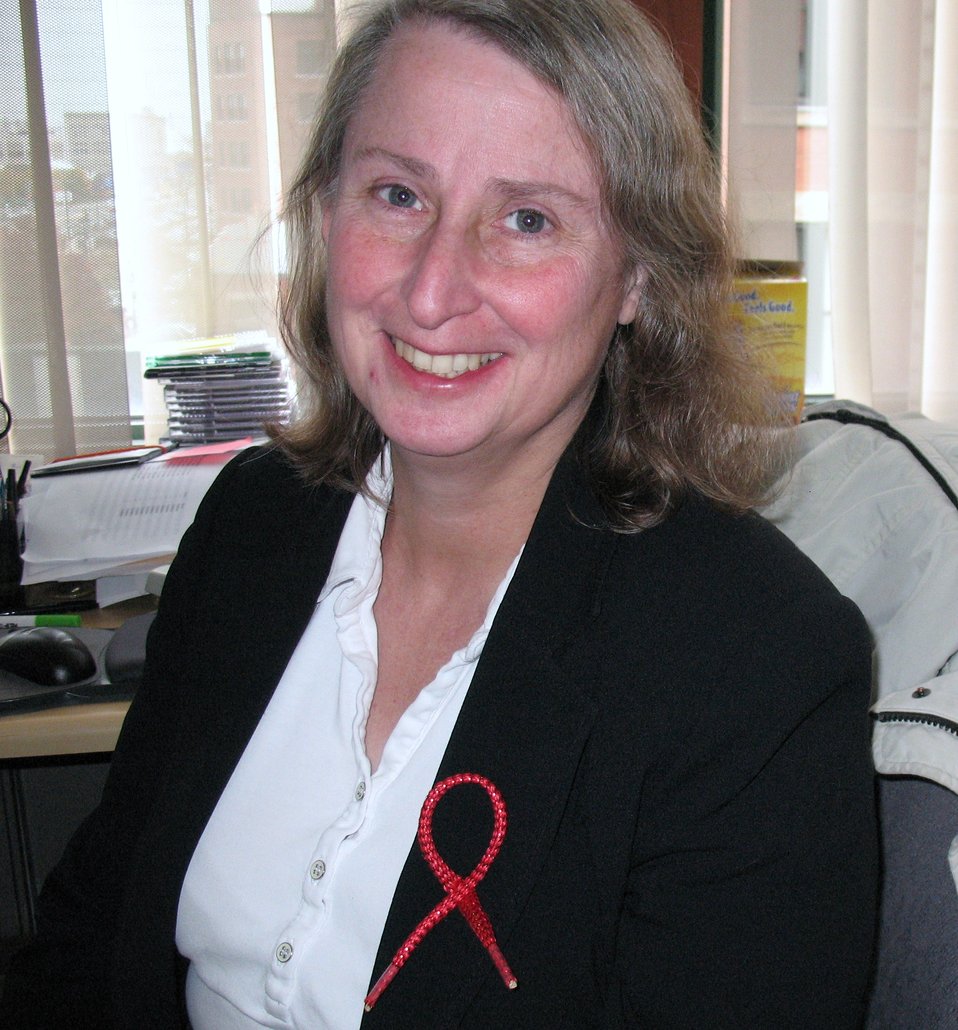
DL